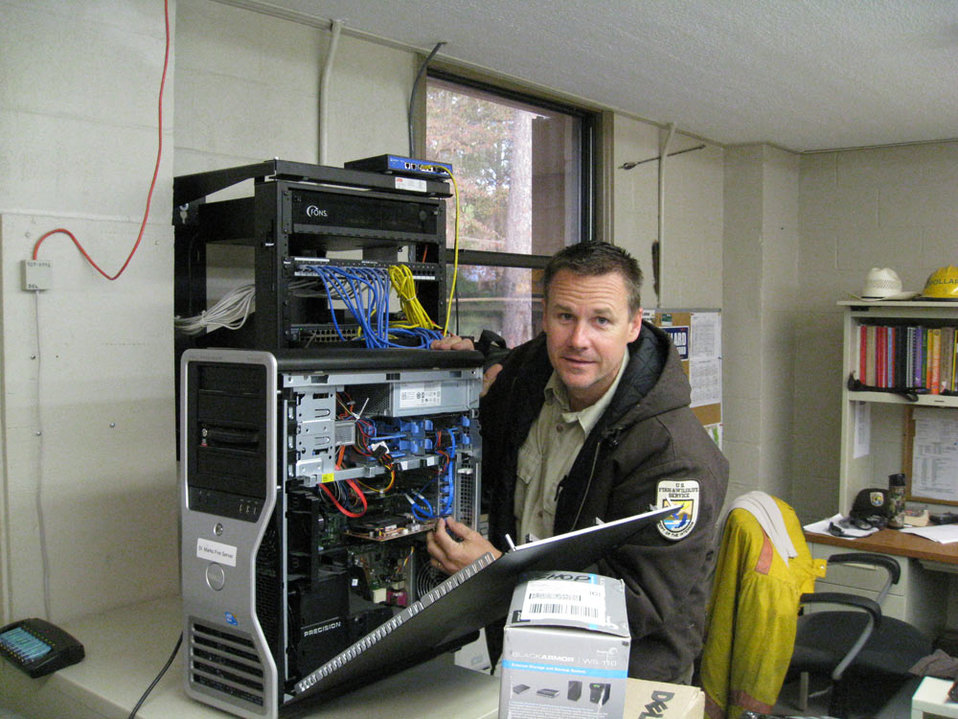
John Edwards -- Southeast Region

John Edwards, of St. Marks National Wildlife Refuge in Florida, served in the Army and is now is the Navy Reserve. He is the Field Information Tech.